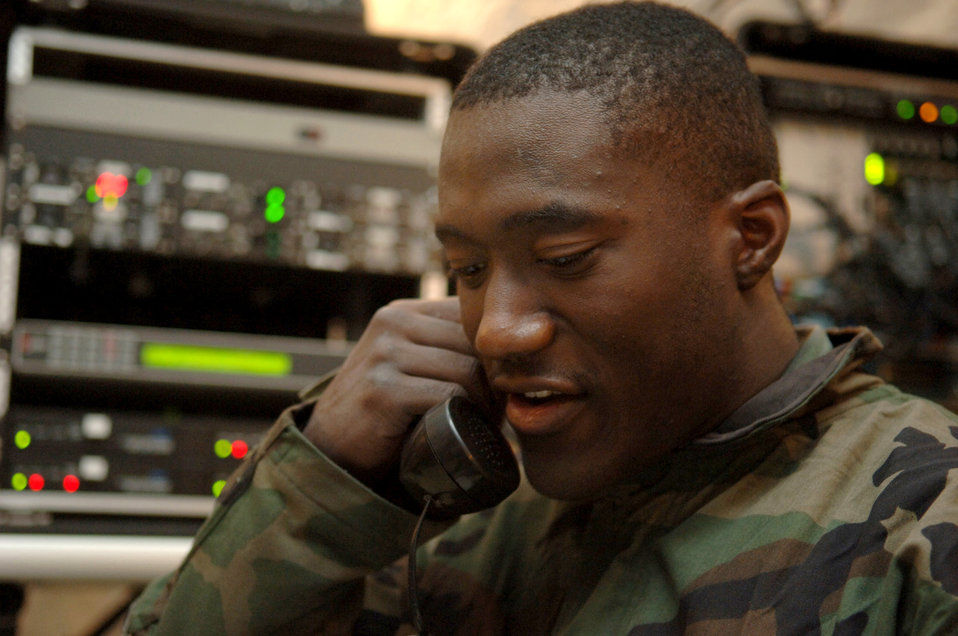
Preparing to deploy

Staff Sgt. Rodney Jeter-Hicks coordinate's computer routes at a simulated deployed location on Tuesday, April 4, 2006. Sergeant Jeter-Hicks is a messaging technician with the 355th Communications Squadron